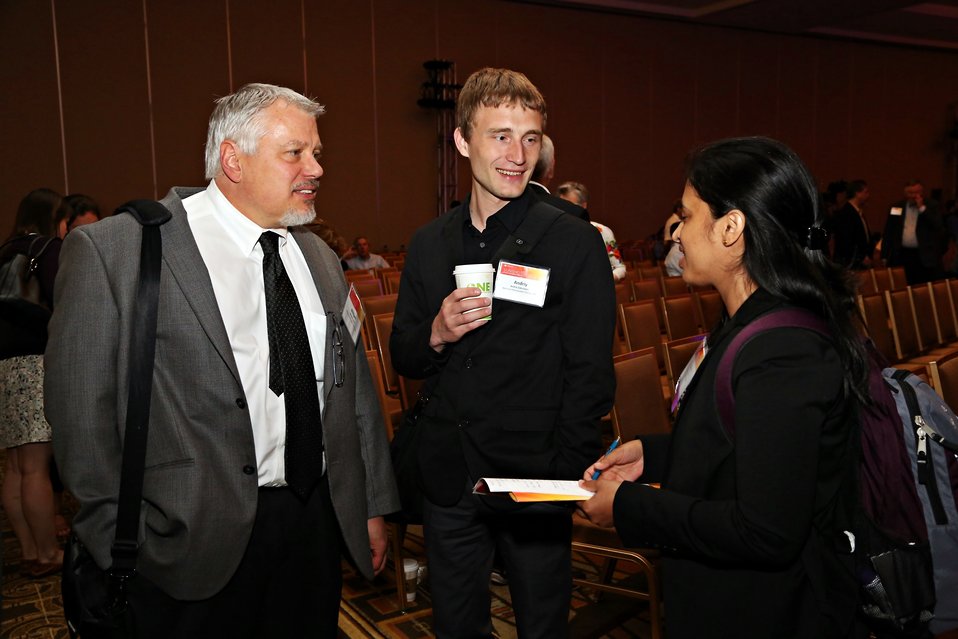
Day 2 Keynote Session 15

Attendees discussing at a keynote session break.